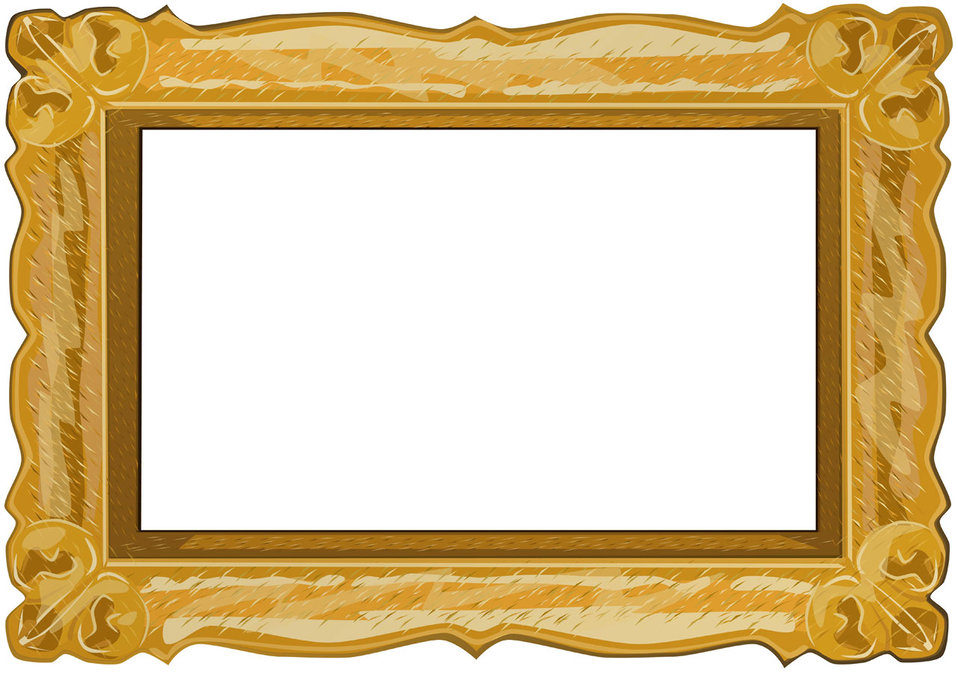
Gold frame

Original vector design.